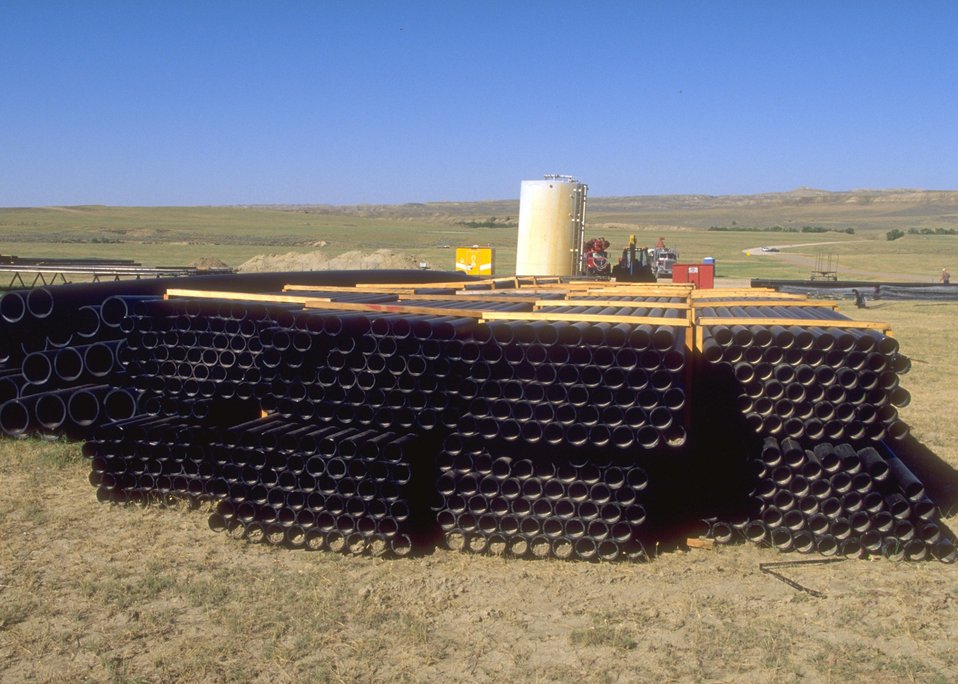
Temporary storage area for coal bed methane development, Buffalo Field Office.